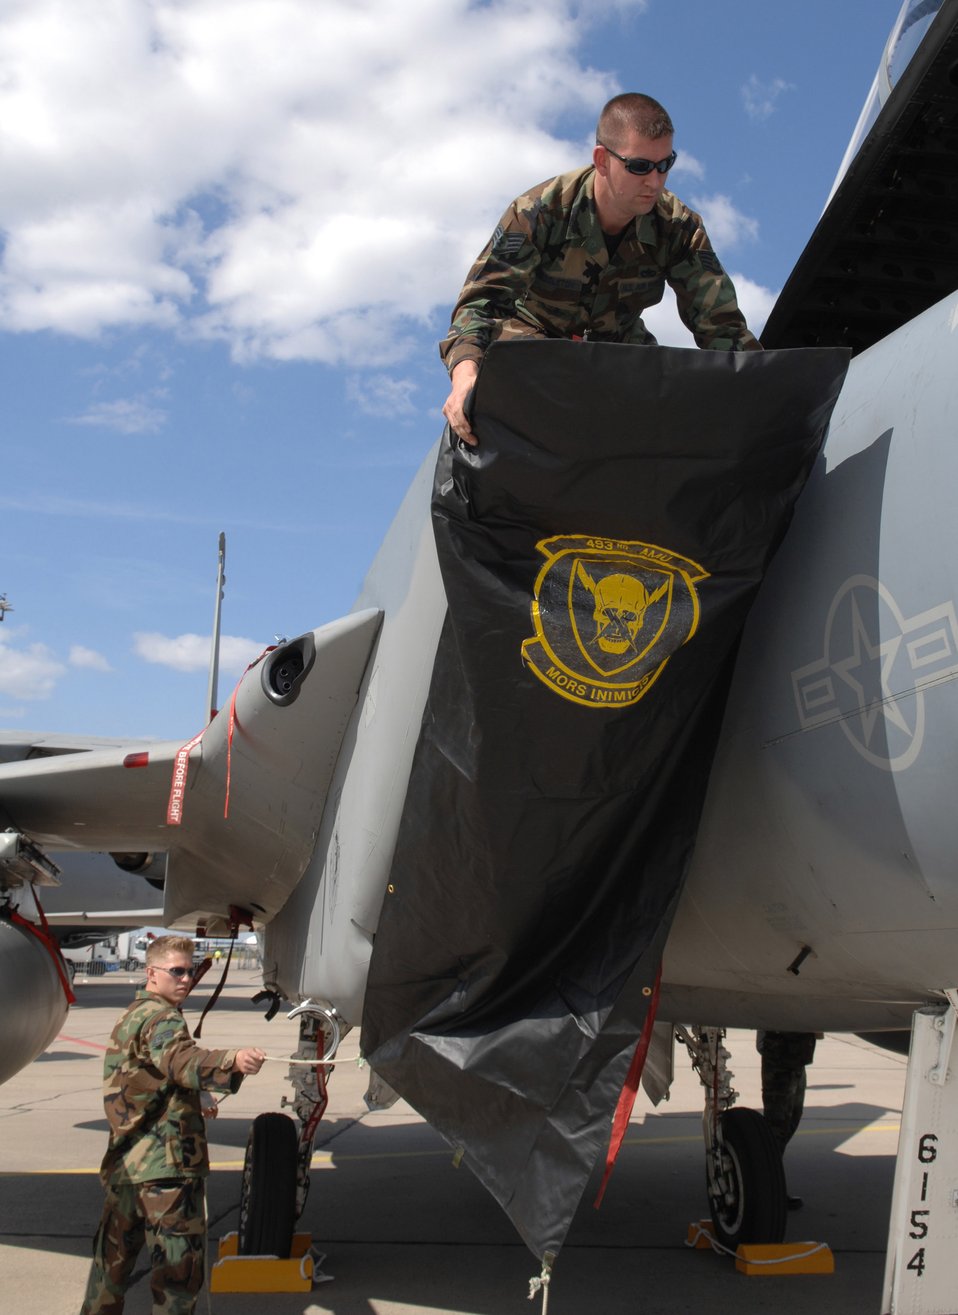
Airmen prepare for 2008 Berlin Air Show

Staff Sgt. Russell Middleton (top) and Staff Sgt. Jeffrey Stout place the intake cover on an F-15 Eagle from the 48th Fighter Wing, Royal Air Force Lakenheath, United Kingdom here May 25 in preparation for the 2008 Berlin Airshow. U.S. participation in the Berlin Airshow enhances the U.S.-German military-to-military relationship and supports security cooperation strategic direction efforts. Sergeants Middleton and Stout are assigned to the 493rd Fighter Squadron at RAF Lakenheath, U.K.